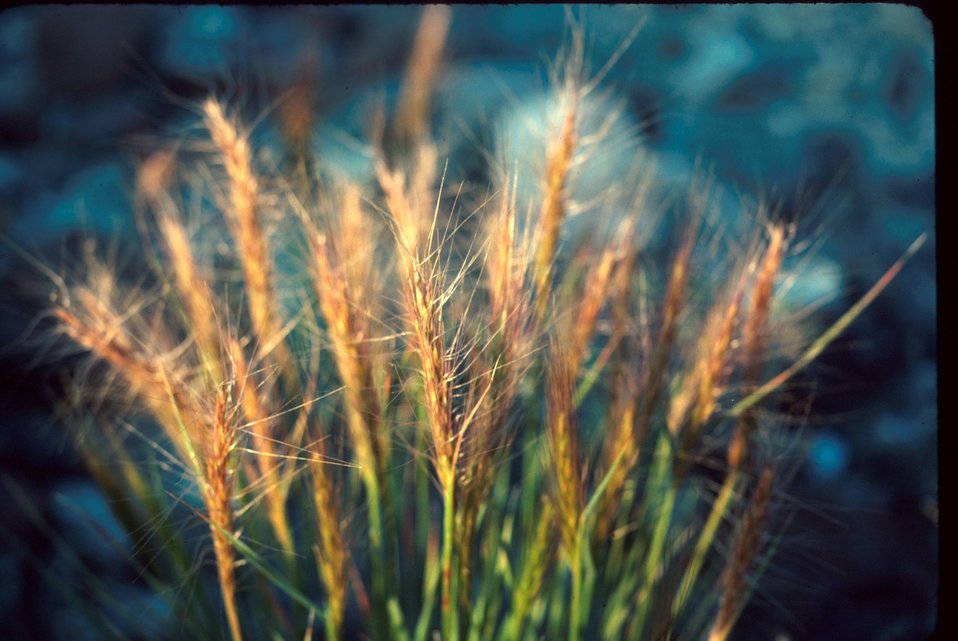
Sitanion hystrix Squirrel tail grass grass